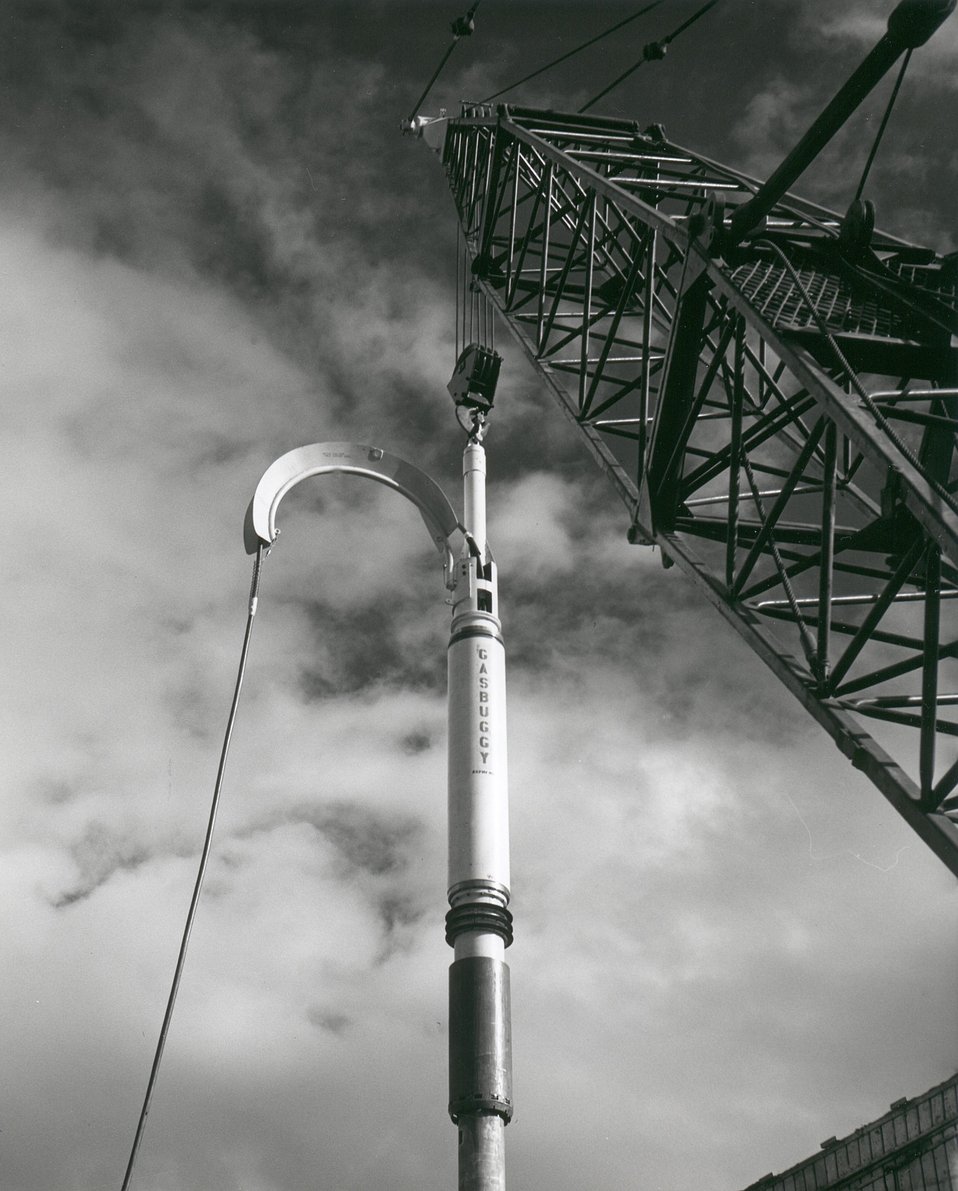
Project Gasbuggy. Circa 1967.